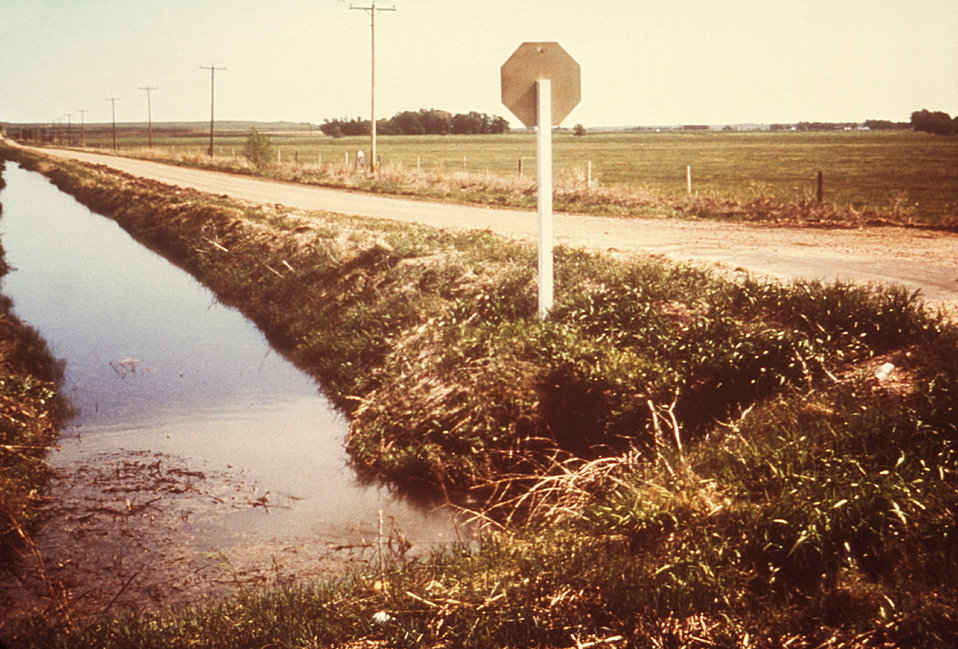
This 1976 photograph depicted a Colorado roadside drainage ditch, which was draining irrigation tailwaters was a known habitat, and breeding site for Culex tarsalis mosquitoes.